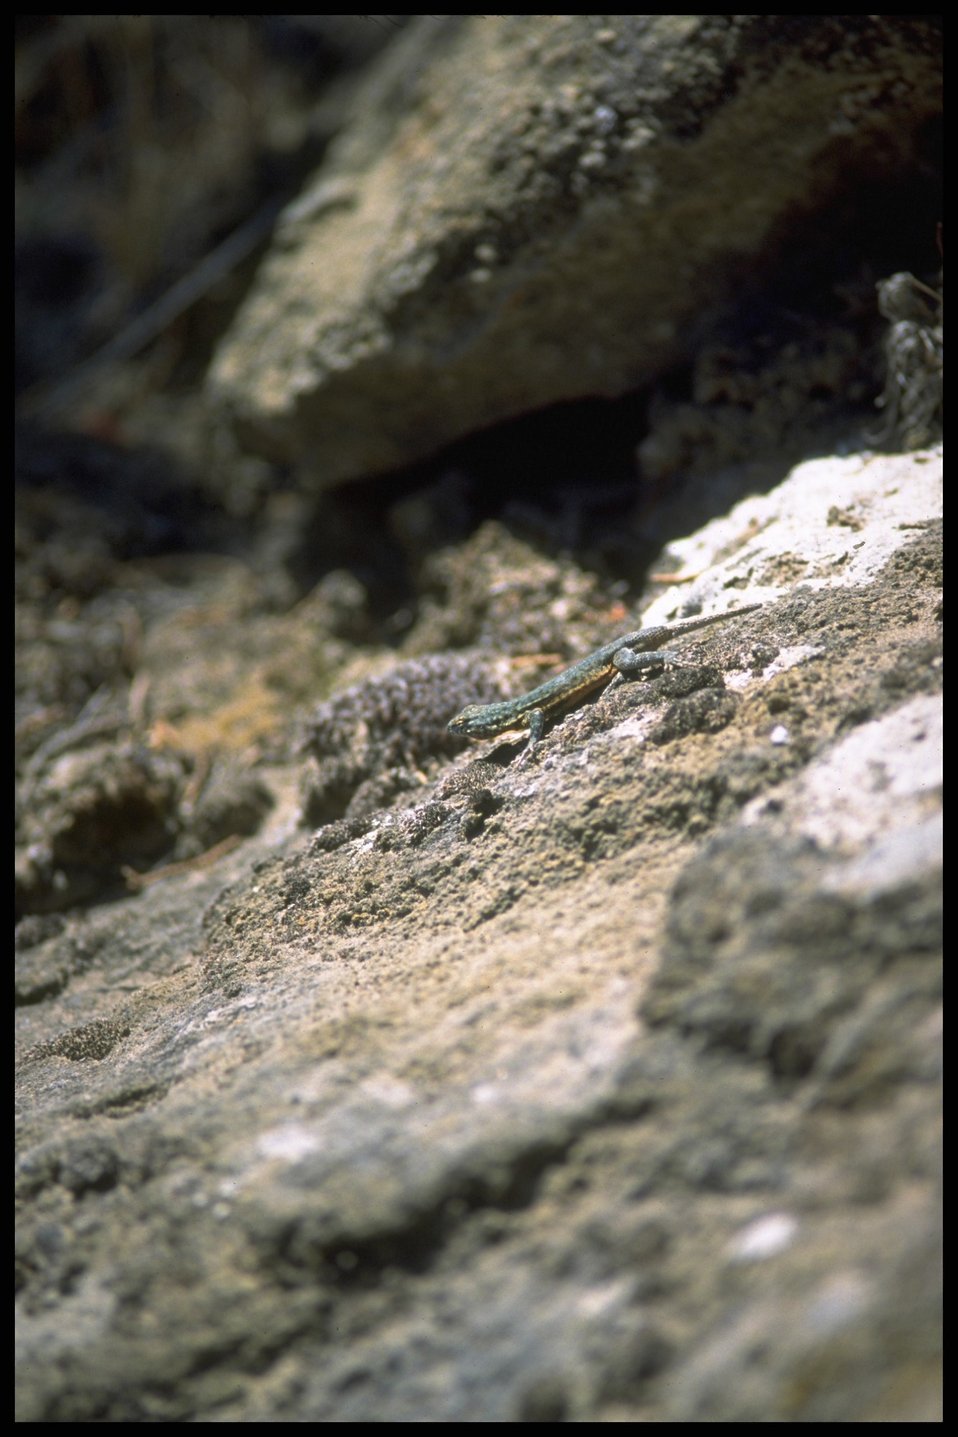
Far shot of Lizard. Lakeview District.